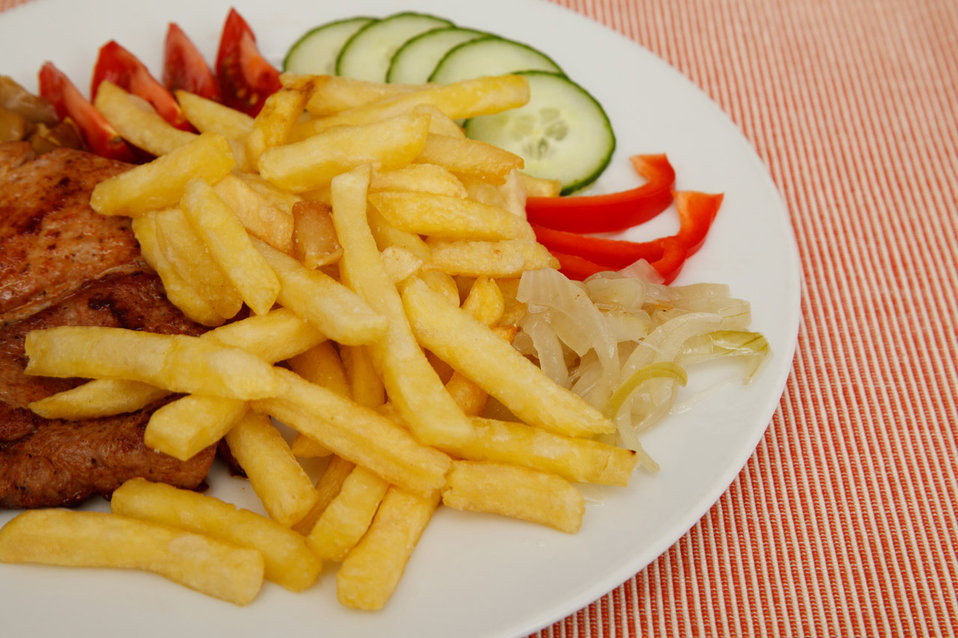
French fries on a plate

French fries and steak with vegetable on the plate.